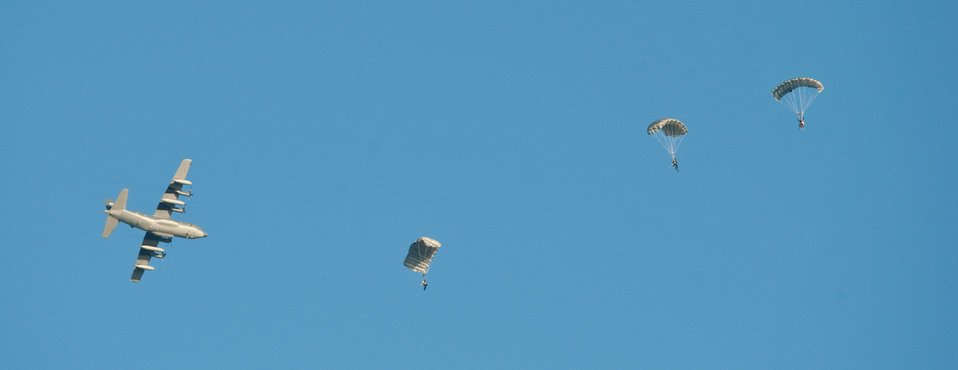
Pararescuemen demonstrate their skills during Air Force Week

Pararescuemen jump from an HC-130P/N King while performing a freefall rescue demonstration Oct. 27, 2010, at Cocoa Beach, Fla. The demonstration was part of Air Force Week Cocoa Beach, a weeklong event showcasing U.S. Air Force capabilities and increase public awareness. The pararescuemen are from the Air Force Reserve Command?s 920th Rescue Wing at nearby Patrick Air Force Base.